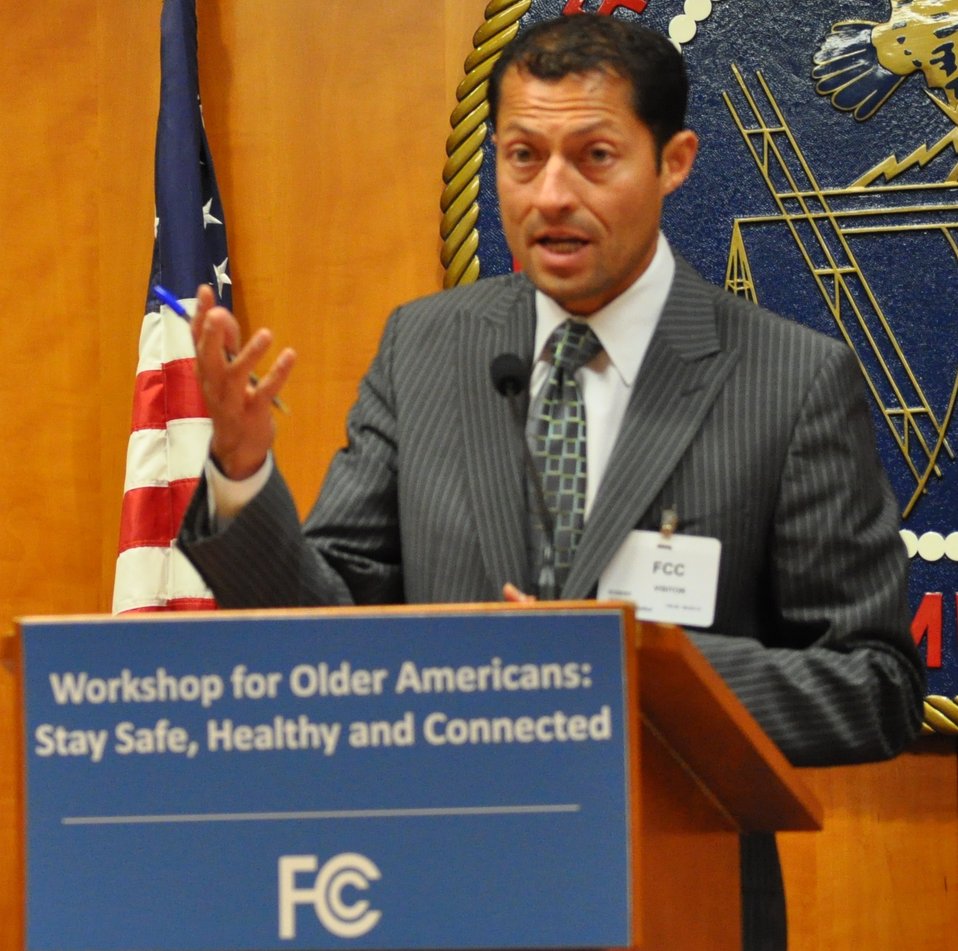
10

Robert Jarrin, Qualcomm